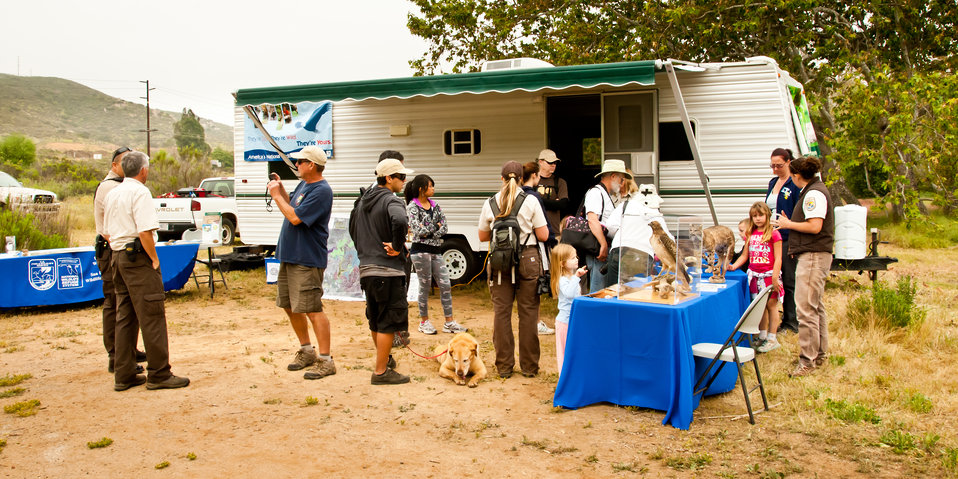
Mobile 'education trailer' out on the Refuge on Earth Day 2012

Those who visited the San Diego NWR on Earth Day, April 22, 2012 got a chance to see real stuffed wildlife up close, meet refuge staff, and get prizes!